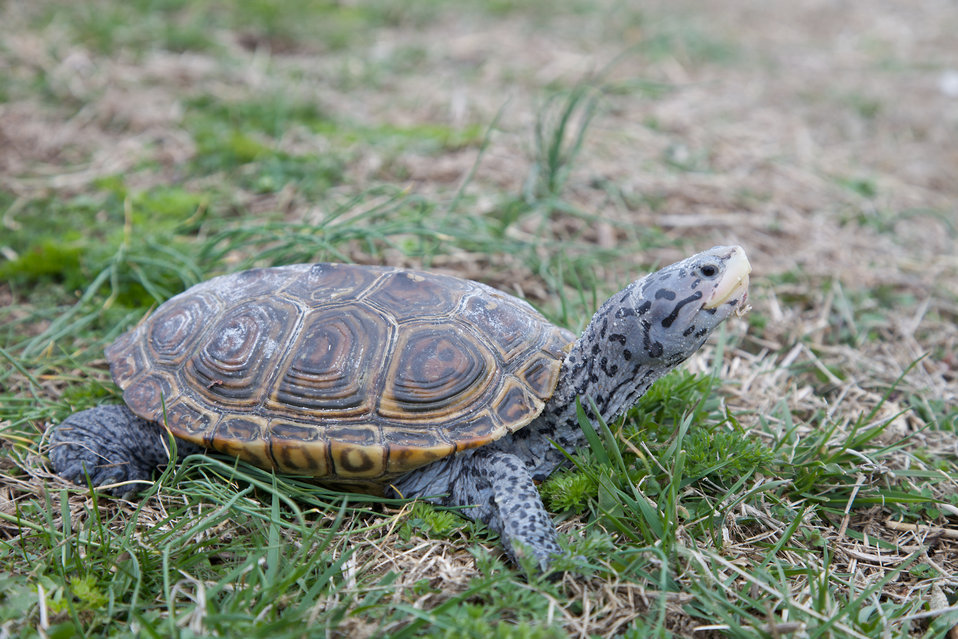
Diamondback Terrapin under the care of the Terrapin Institute located on the Eastern Shore of Maryland.